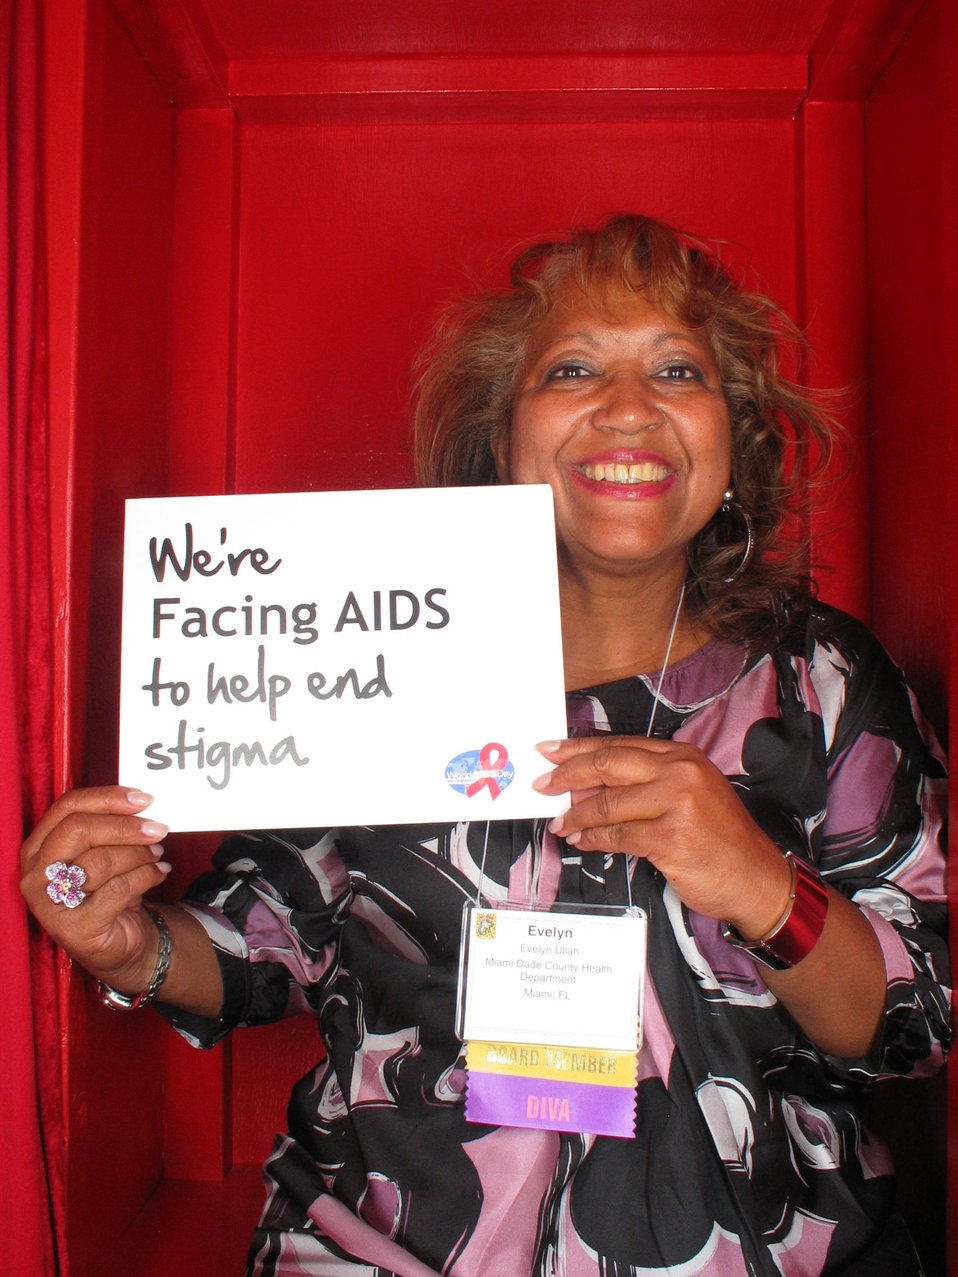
We're Facing AIDS to help end stigma.